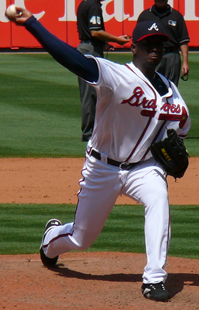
Picture I took of Rafael Soriano on 5-10-07
23:57,13 May 2007 . . Chrisjnelson . . 199×310 (111,897 bytes)